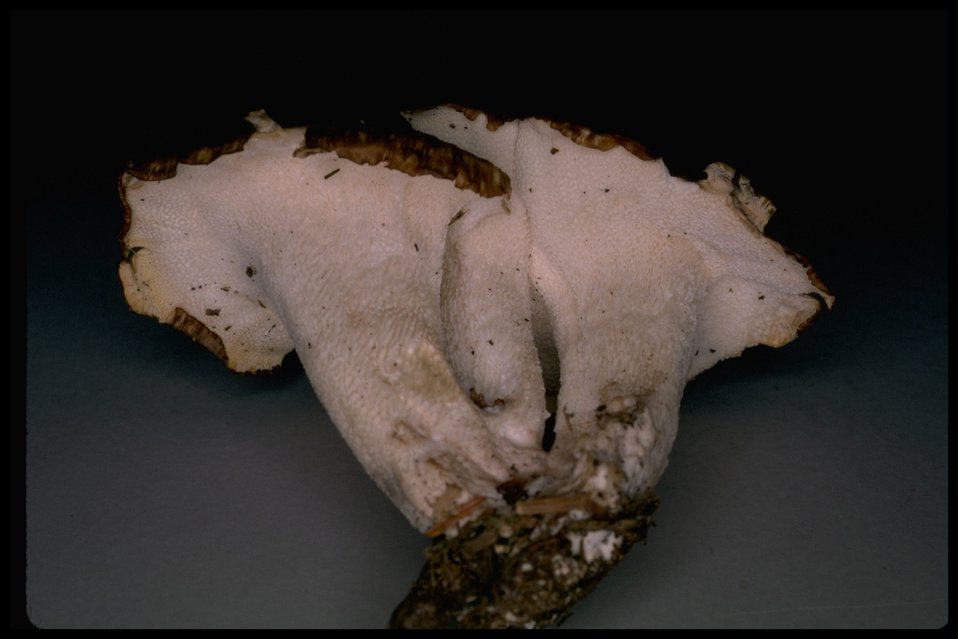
Bondarzewia mesenterica, commonly known as Bondarzewia.